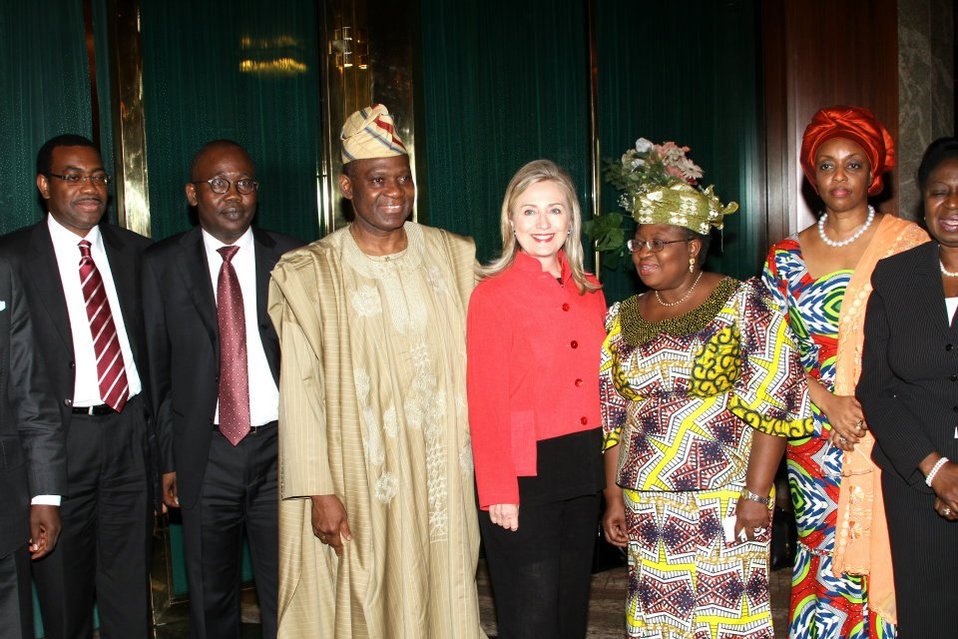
Secretary Clinton Meets With Nigerian Ministers

U.S. Secretary of State Hillary Rodham Clinton poses for a photo with Nigerian Ministers in Abuja, Nigeria, on August 9, 2012.